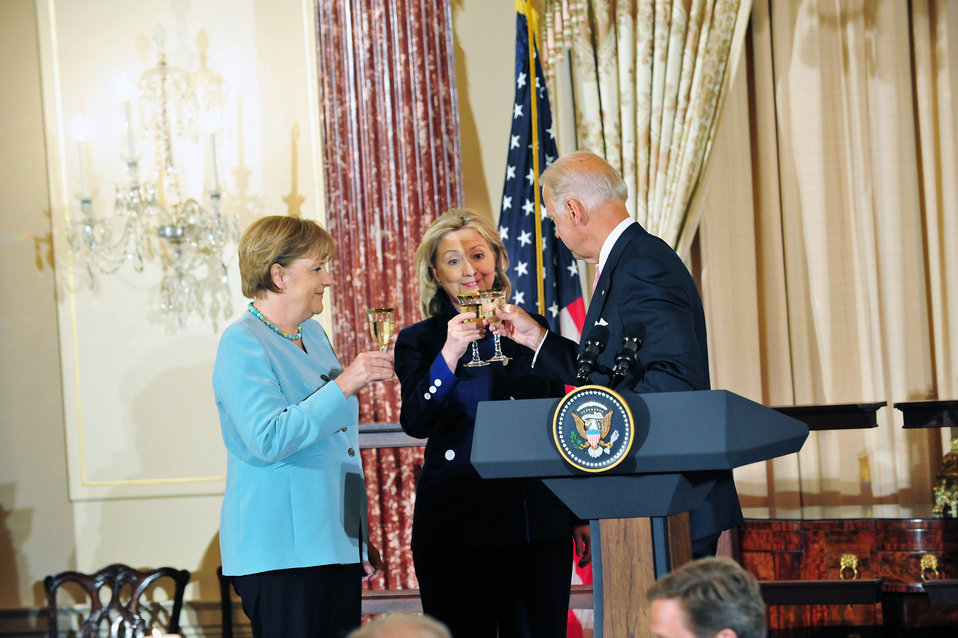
German Chancellor Merkel, Secretary Clinton, and Vice President Biden Toast the U.S.-Germany Partnership

German Chancellor Angela Merkel, left; U.S. Secretary of State Hillary Rodham Clinton, center; and U.S. Vice President Joseph Biden toast the U.S-Germany partnership at a luncheon co-hosted by U.S. Vice President Joseph Biden and Dr. Jill Biden, and U.S. Secretary of State Hillary Rodham Clinton.